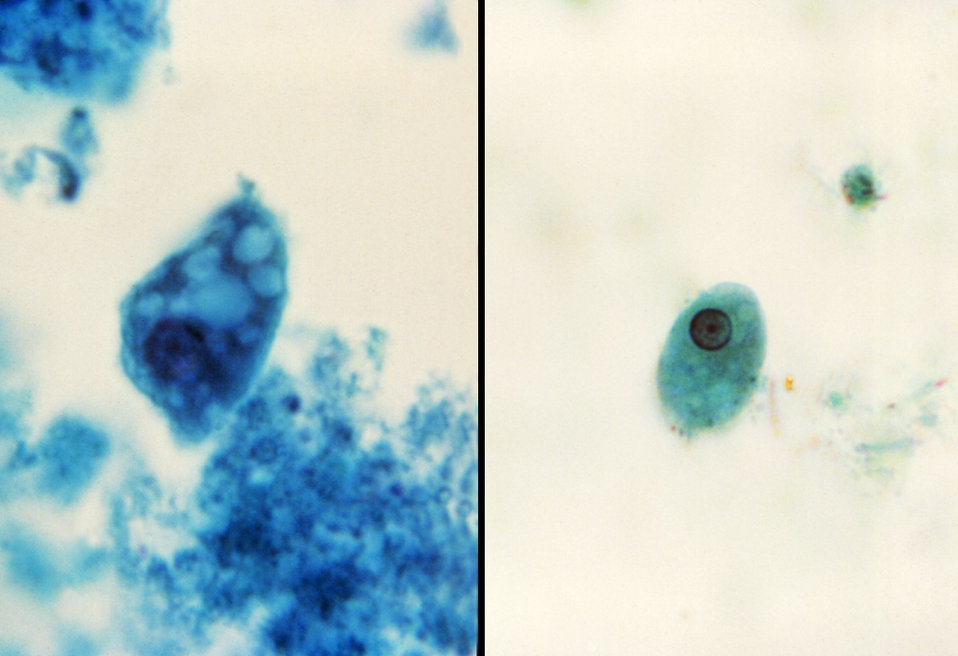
This split-screen image revealed two parasitic Entamoeba histolytica protozoan trophozoites.